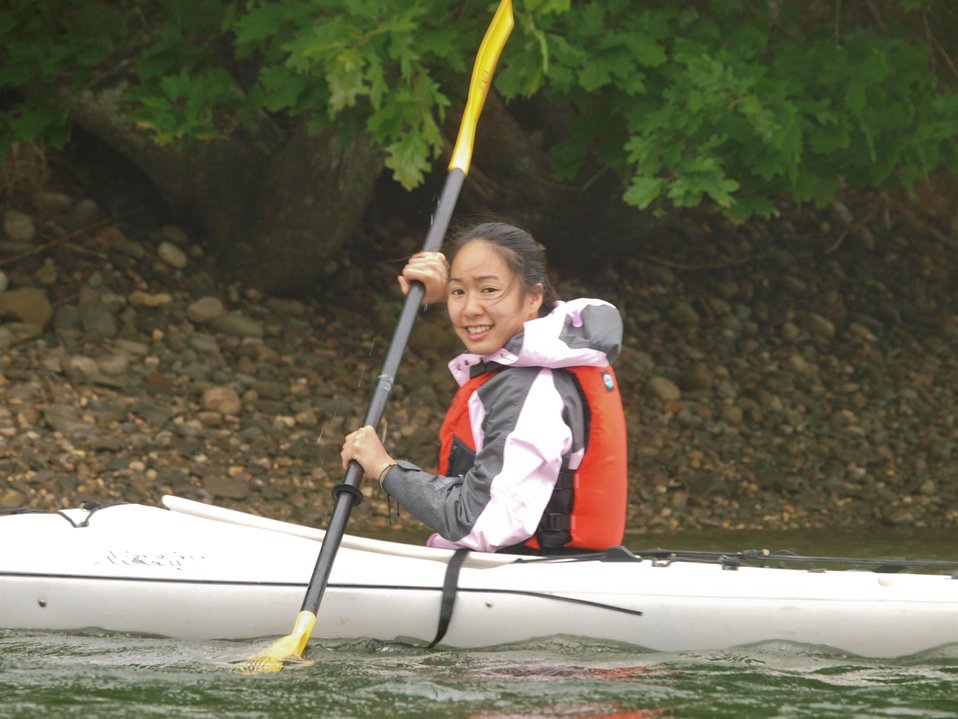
Kayak Trip